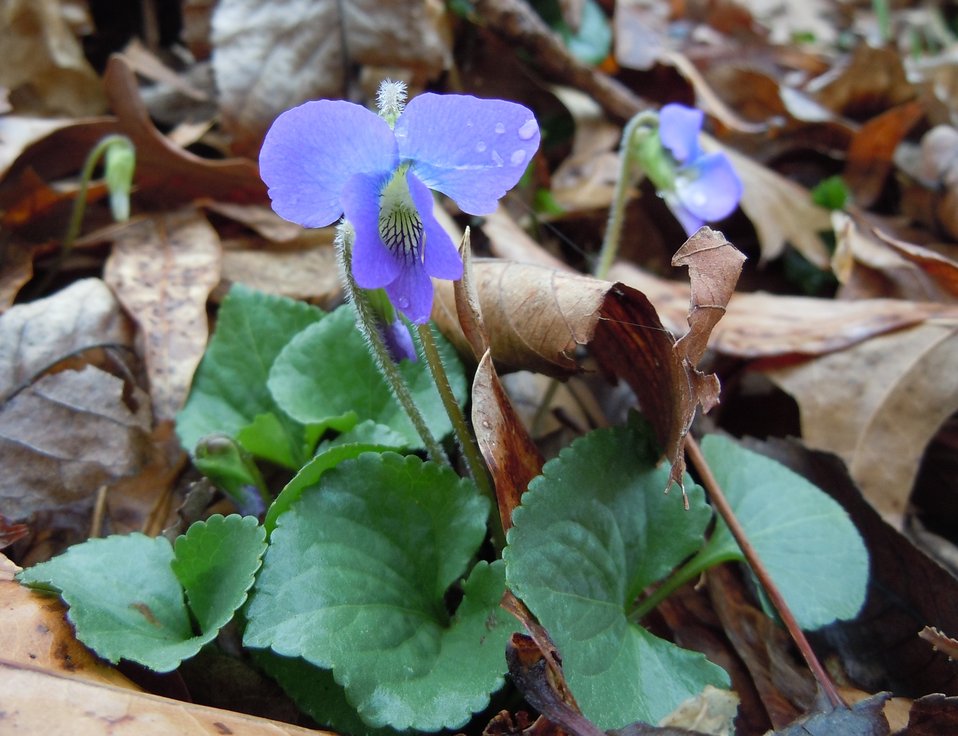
Common Blue Violet